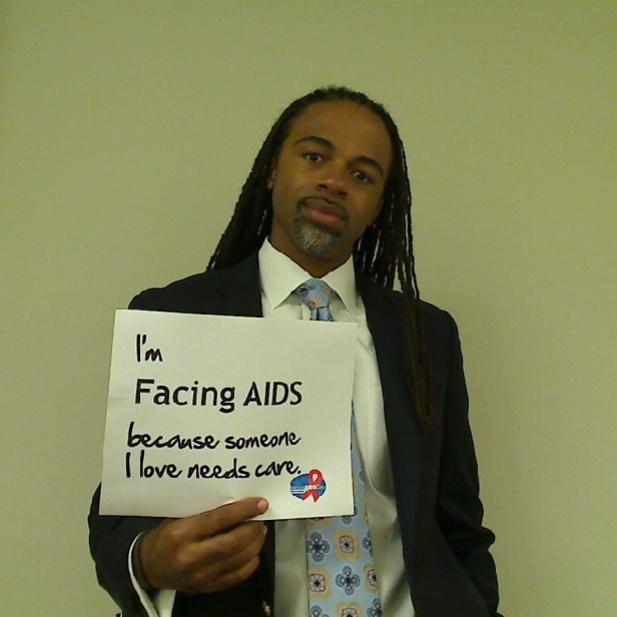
I'm Facing AIDS because someone I love needs care.